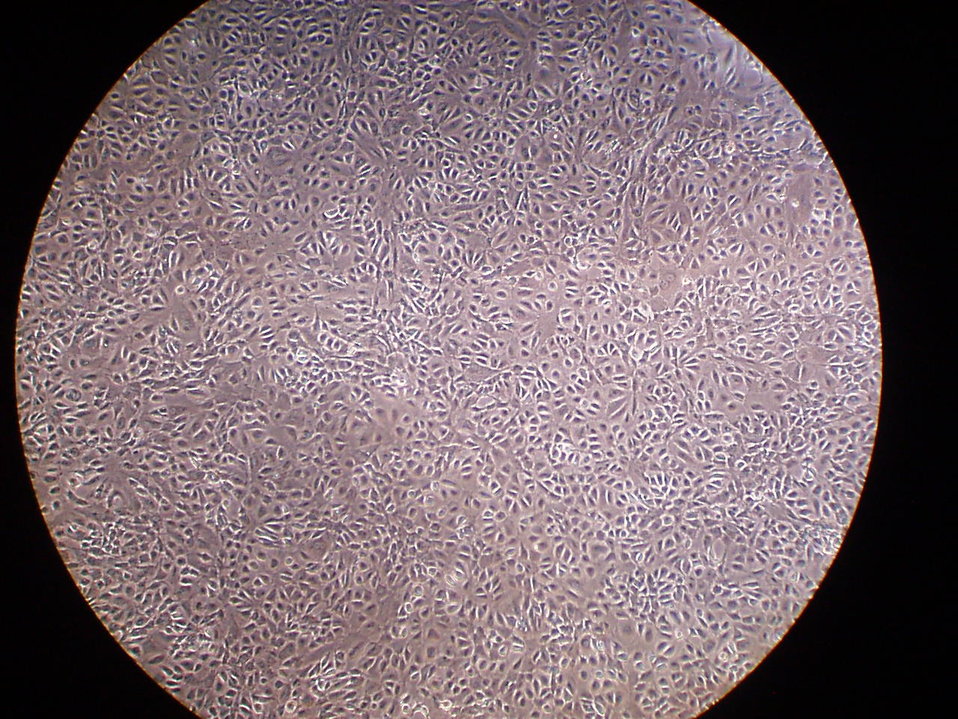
Confluent human peritoneal mesothelial cells, third passage. Português: Células mesoteliais do peritônio humano